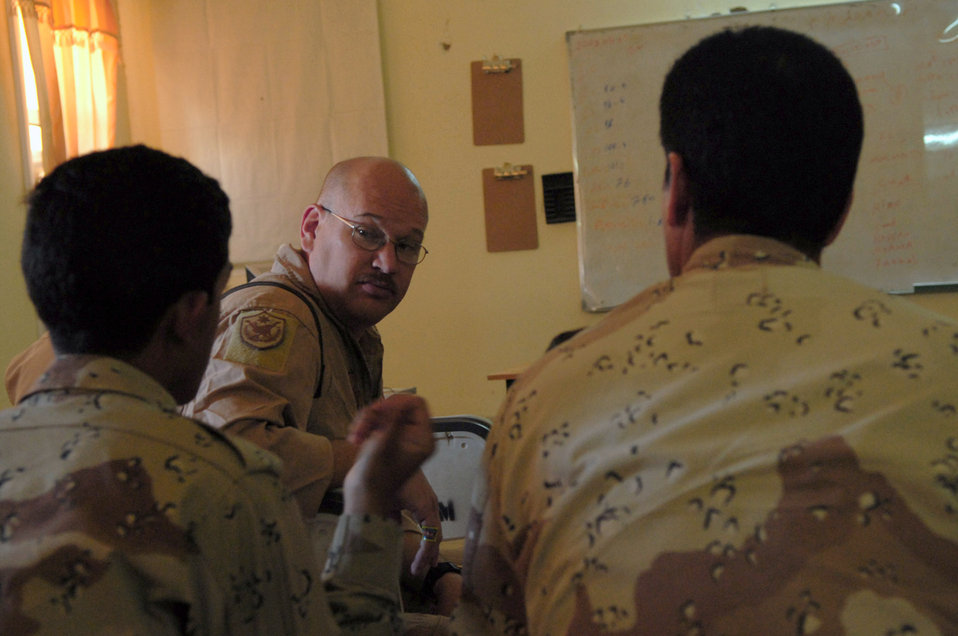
Airmen help Iraqi air force become self-sustaining service

Master Sgt. Bradley Martens speaks with Iraqi air force trainees about procedures before a mission May 29 at Camp Taji, Iraq. Sergeant Martens is the 770th Air Expeditionary Advisory Squadron lead aerial gunner training instructor deployed from Hurlburt Field, Fla.